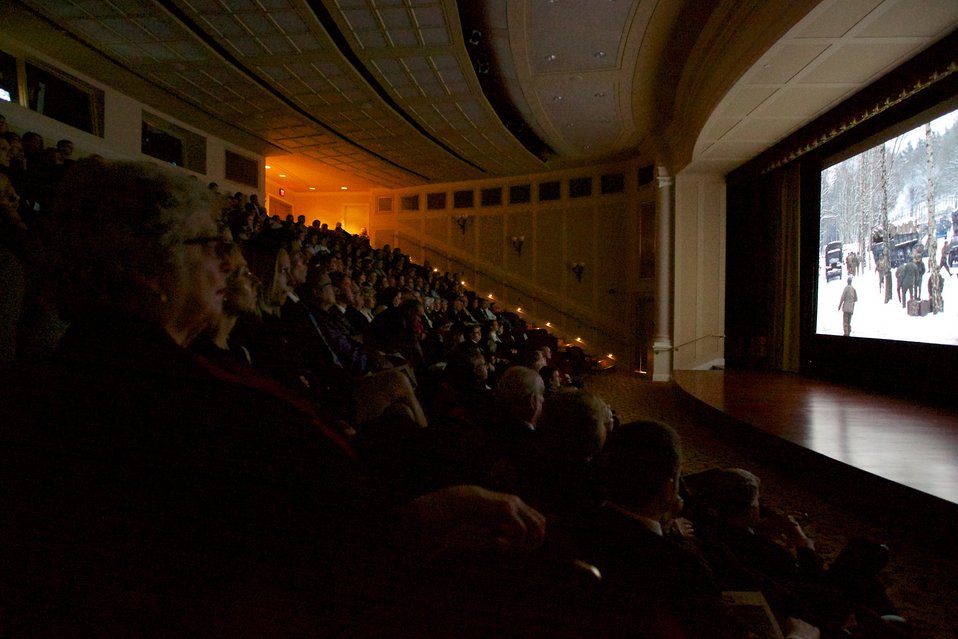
Monuments Men Public Screening; The audience enjoying The Monuments film